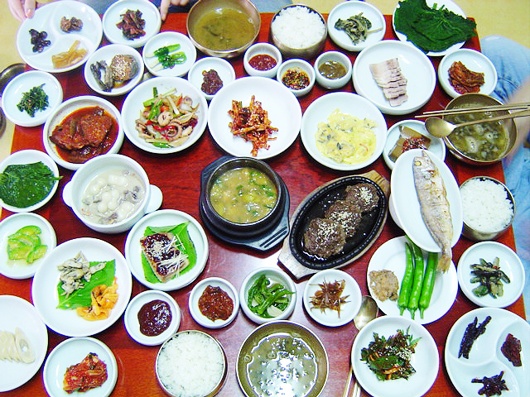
A hanjeongsik table setting with various banchan in Damyang, Jeolla province, Republic of Korea